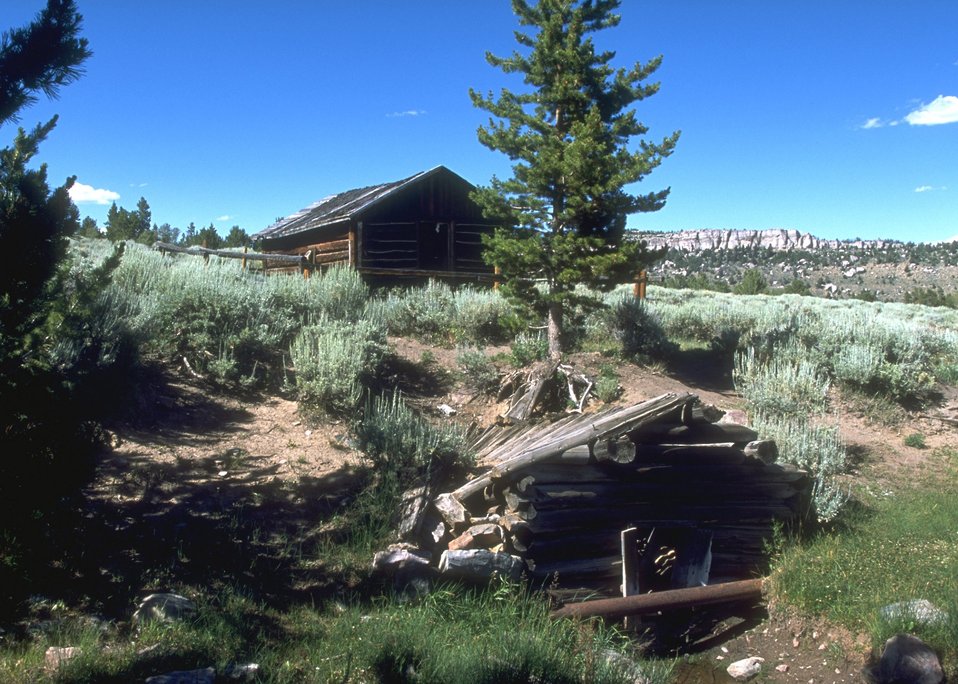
Structures at Miners Delight, Lander Field Office.